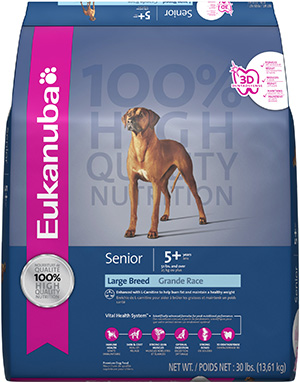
RECALLED – Dog and Cat foods - Dry

August 14, 2013 – Product Recall – P&G Voluntarily Recalls Limited Quantity of Dry Pet Food Due to Possible Health Risk.